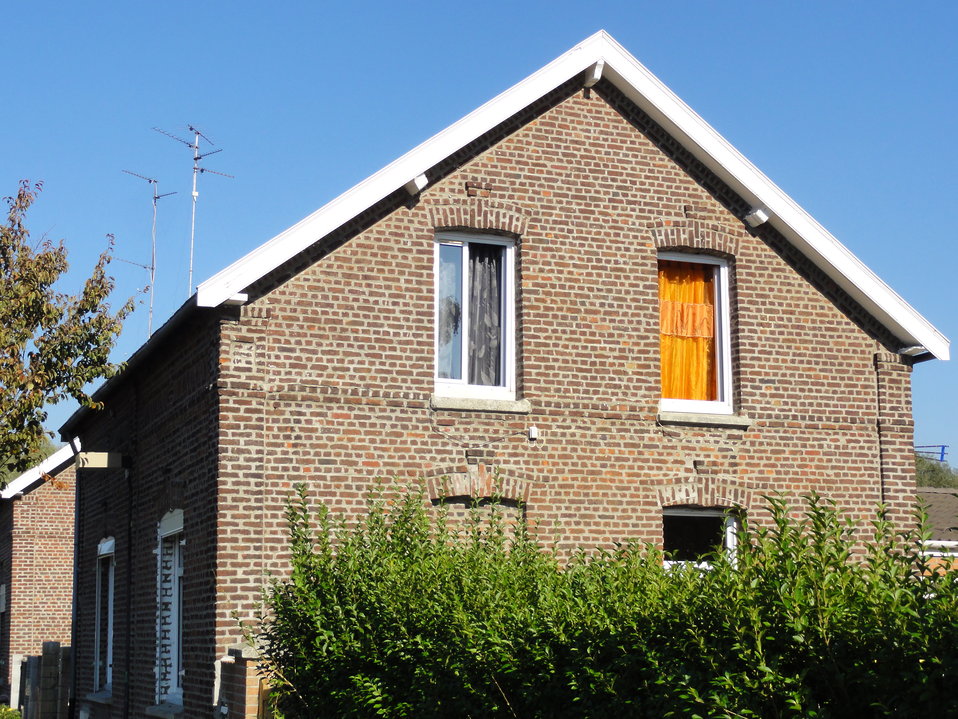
Français : Cités de la Fosse La Grange de la Compagnie des mines d'Anzin, Raismes, Nord, Nord-Pas-de-Calais, France.